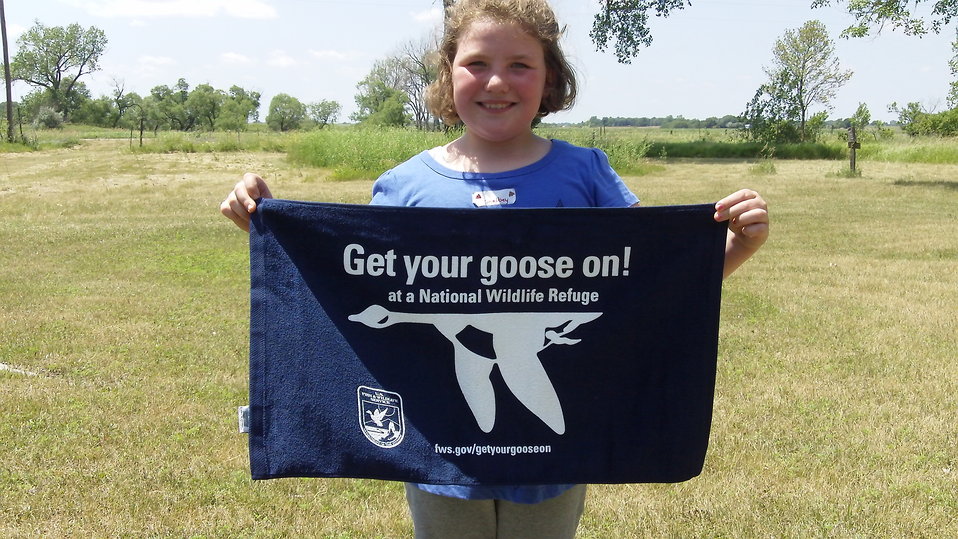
Get Your Goose On!

Photo taken at Huron Wetland Management District in east-central South Dakota.